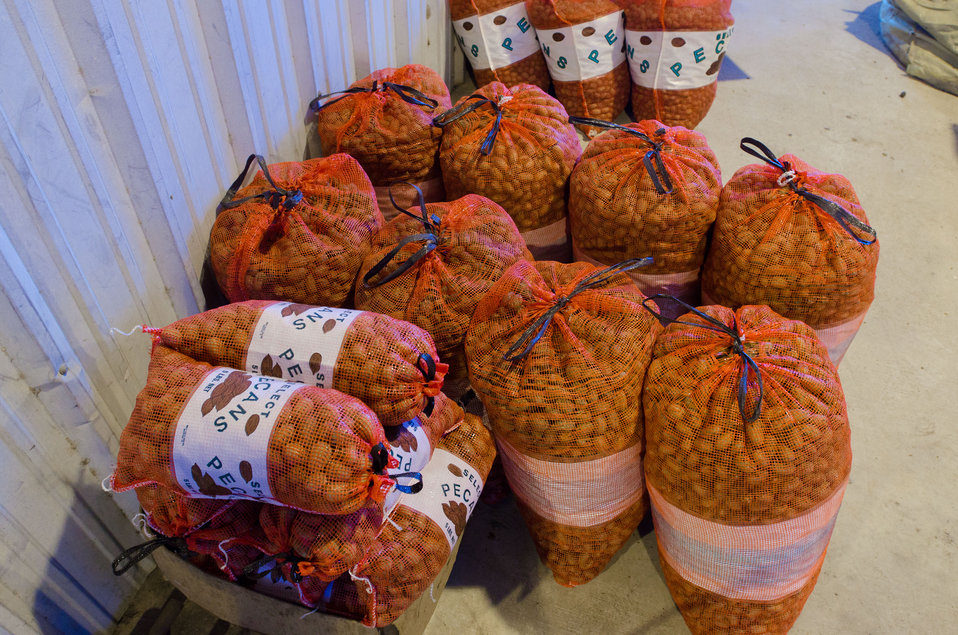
Five and 50 pound bags of pecans produced at Arrowhead Farms of Crystal City, TX, on Friday, December 9, 2011, owned by Mr. Akram Mohammad, a pecan farmer since 2005. The 719 acre farm with 10,000 trees, features some orchards with underground micro irrigation system that feeds water to the roots of 4,380 pecan trees on 146 acres. Mr. Mohammad said, “USDA (U.S. Department of Agriculture) was essential to my business and trees surviving the recent exceptional drought. The trees were stress free thanks to underground micro-irrigation. This is essential to the future growth of Texas agriculture and good for America.” U.S. Department of Agriculture’s (USDA) Environmental Quality Initiative Program (EQIP) awarded Mr. Mohammad a $130,000 grant in 2008. He provided $26,000 for the balance of the $156,000 total cost to install a 146-acre underground micro-irrigation for 4,380 trees.